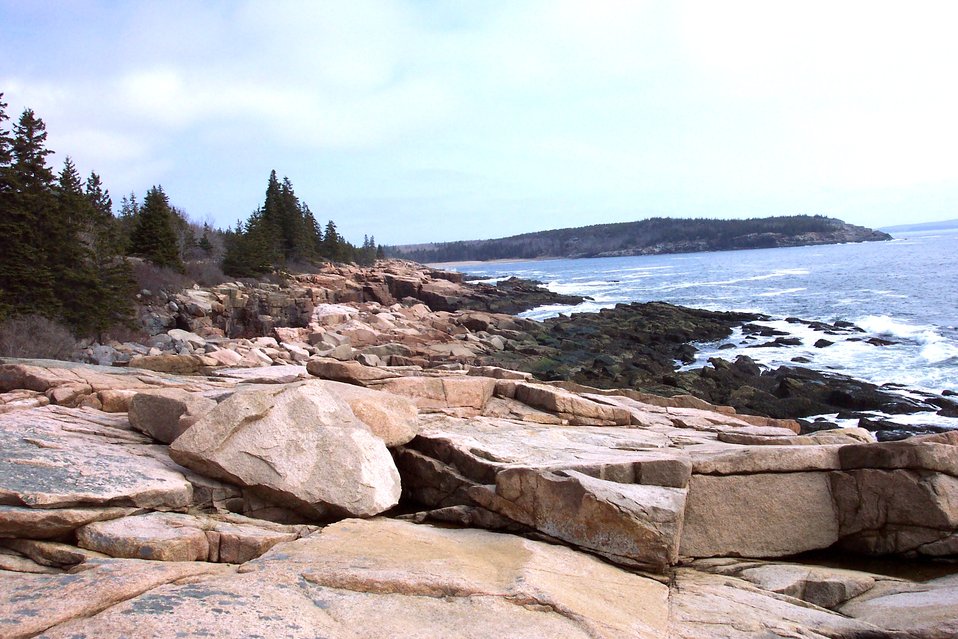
Looking north towards Sand Beach along the southeast coast of Mt. Desert Island.